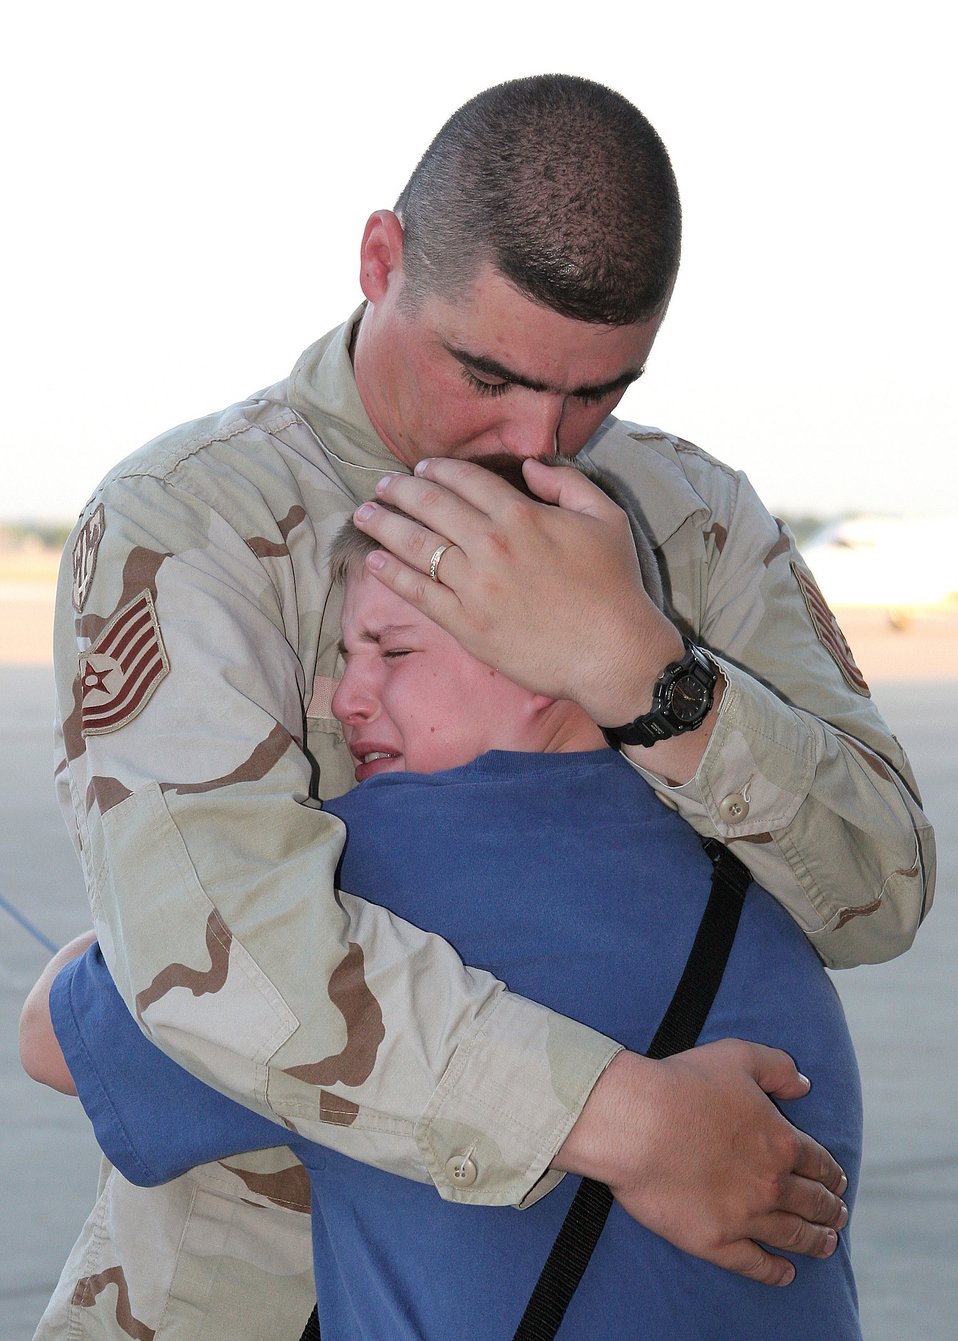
Daddy's home

LACKLAND AIR FORCE BASE, Texas -- Tech. Sgt. Rick Bouwhuis reassures his son, Nicolas, after returning home from an eight-month deployment in Iraq. Sergeant Bouwhuis is assigned to the 37th Security Forces Squadron.